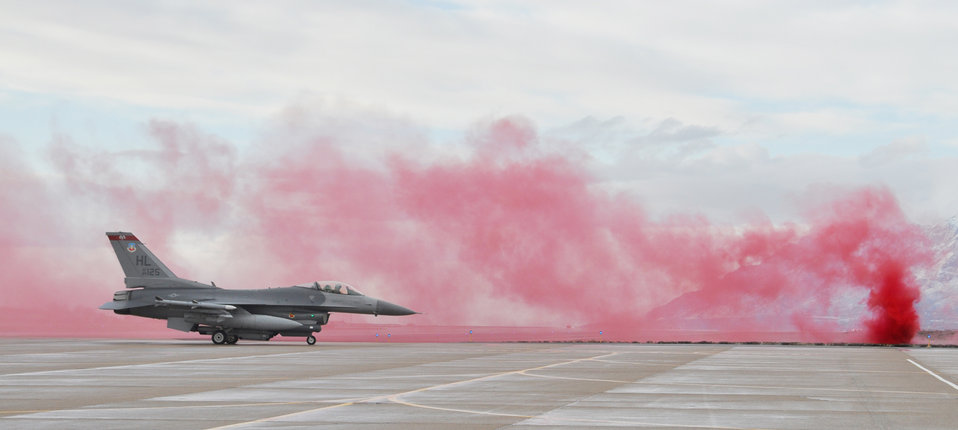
Smoke gets in my eyes

An F-16 Fighting Falcon from the 388th Fighter Wing taxis through red smoke from an